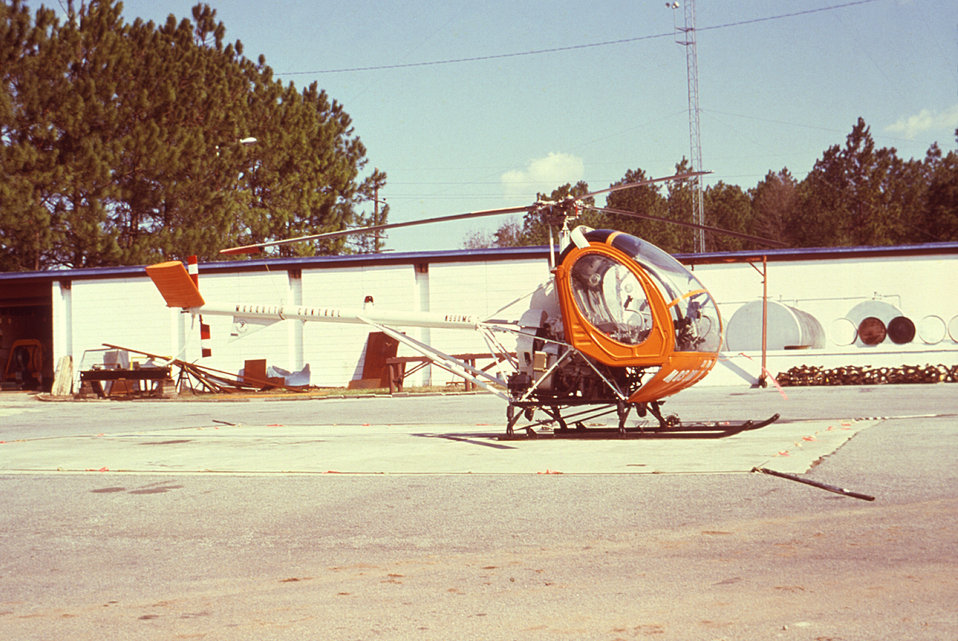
This photograph depicts a Hughes helicopter that had been outfitted with an ultra-low volume (ULV) insecticidal fog generator enabling it to be used to control populations of insect disease vectors.